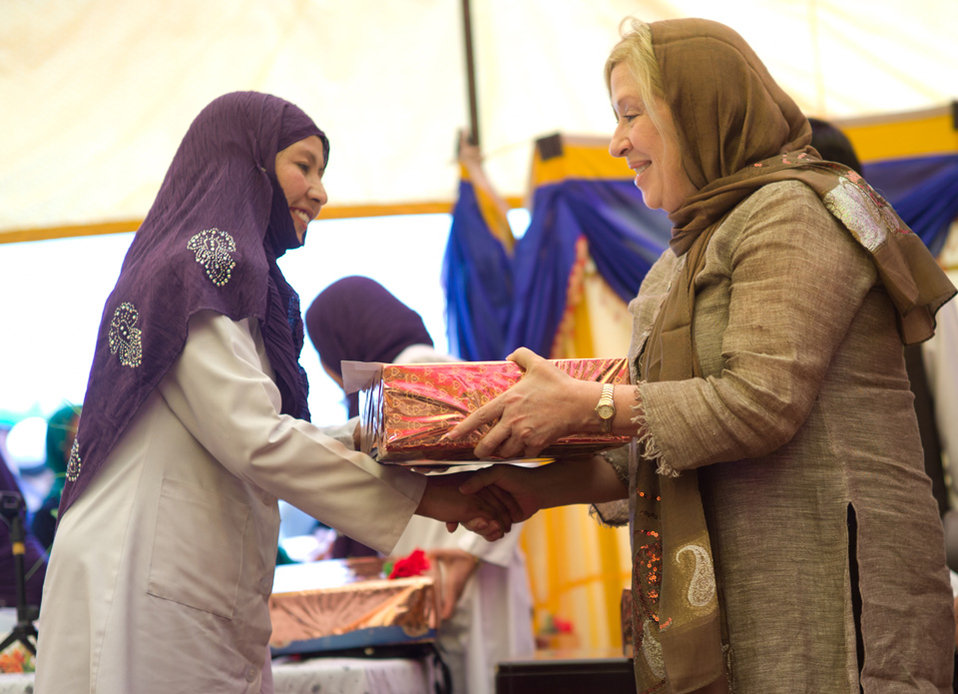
Carol presenting graduation gift